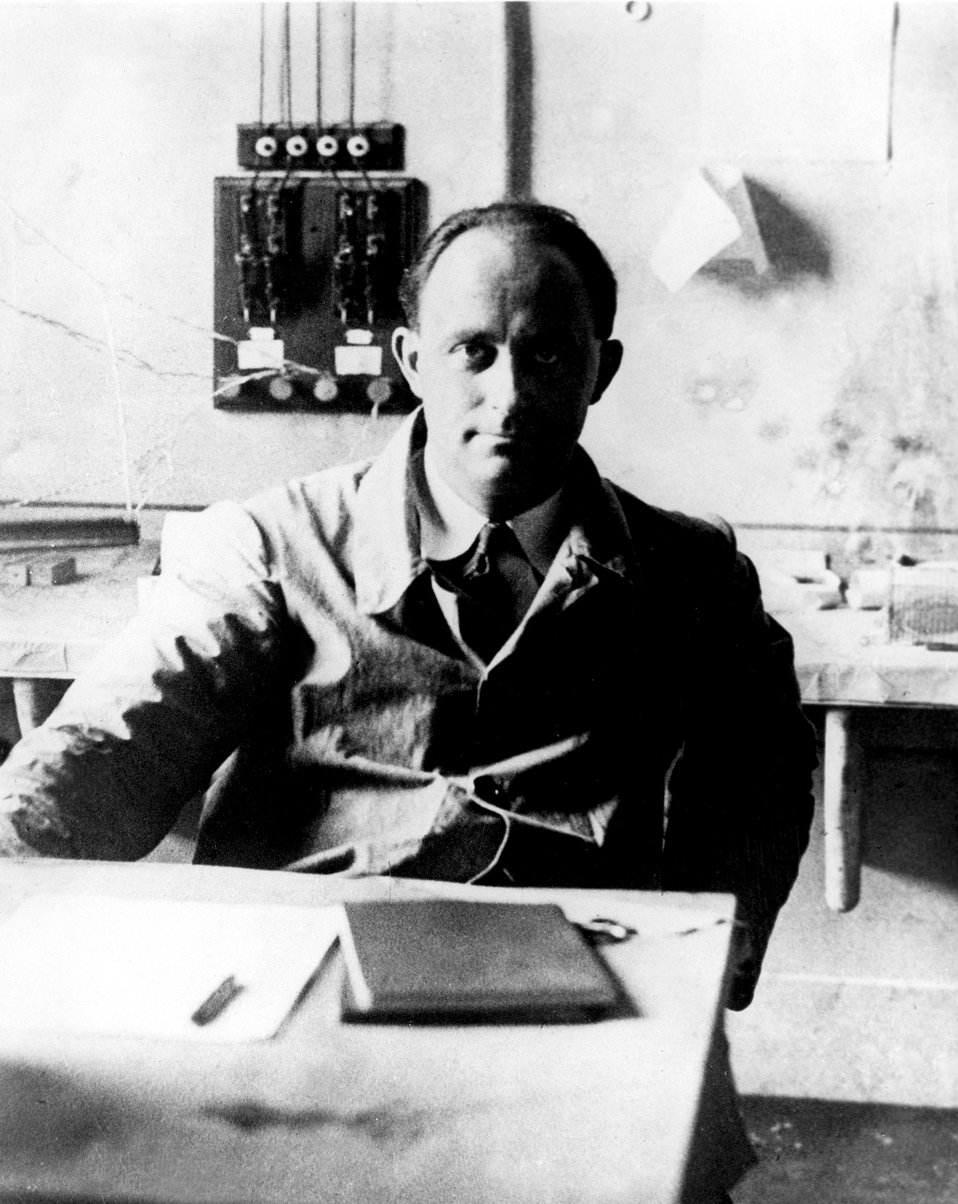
Enrico Fermi.